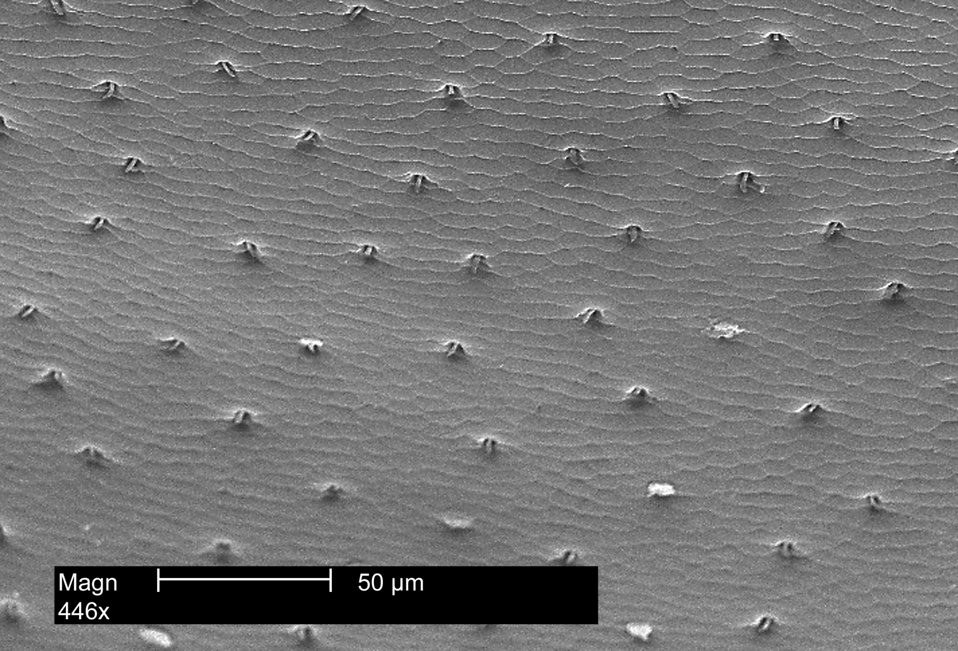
An electron micrograph of the chitinous shell covering the back of a ladybug magnified 446x.